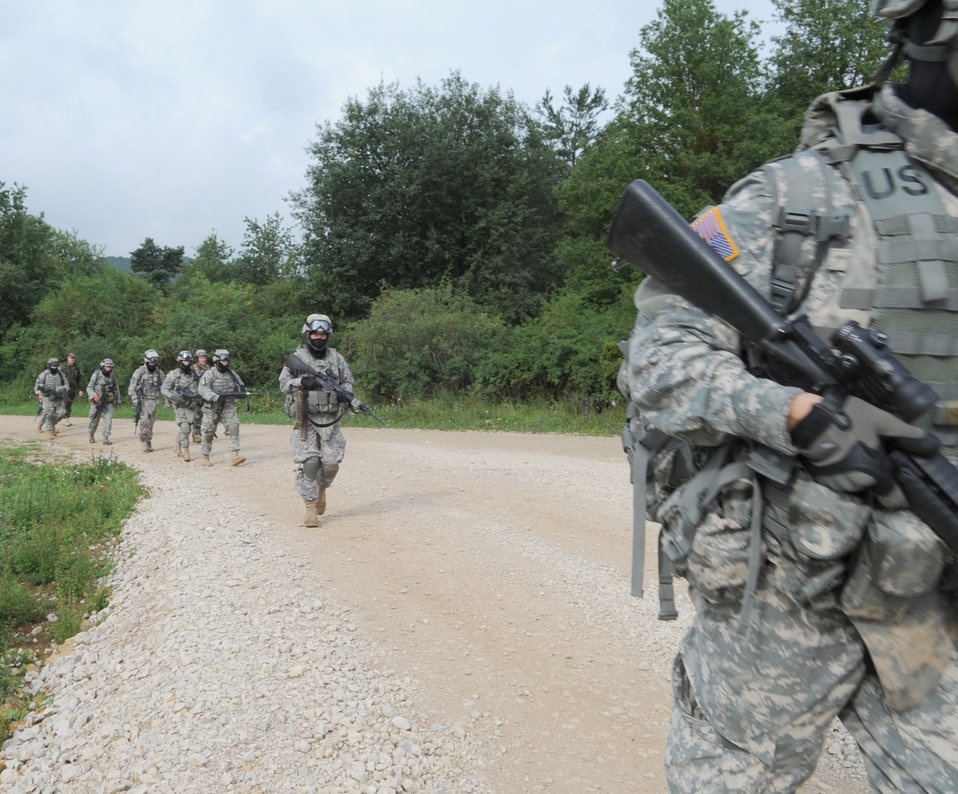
Close air support training

Air Force, Army and NATO members walk to the loading zone for an air assault mission scenario Aug. 3, 2010, during exercise Allied Strike 10 at Hohenfels, Germany.